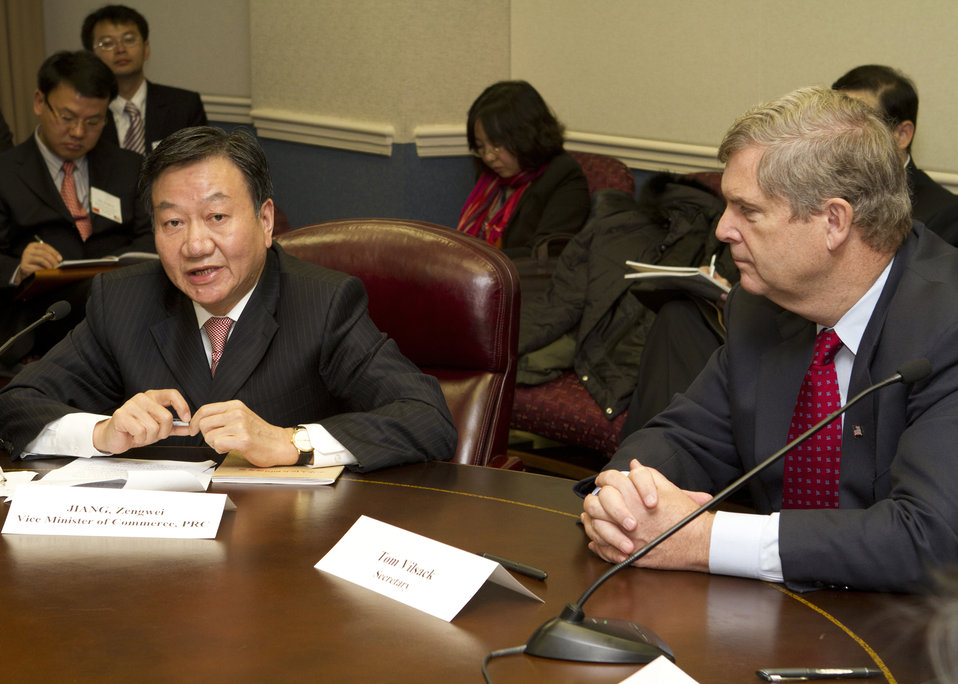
Agriculture Secretary Tom Vilsack (right) listens to People’s Republic of China Vice Minister of Commerce Jaing Zengwei remarks at a signing agreement held at the U.S. Department of Agriculture in Washington, D.C., on November 22, 2010. The agreement is with a Chinese buying delegation and the U.S. soybean industry, indicating that the Chinese intend to purchase up to eight million metric tons of U.S. soybeans, valued at $3 billion. USDA photo 10di1559-715